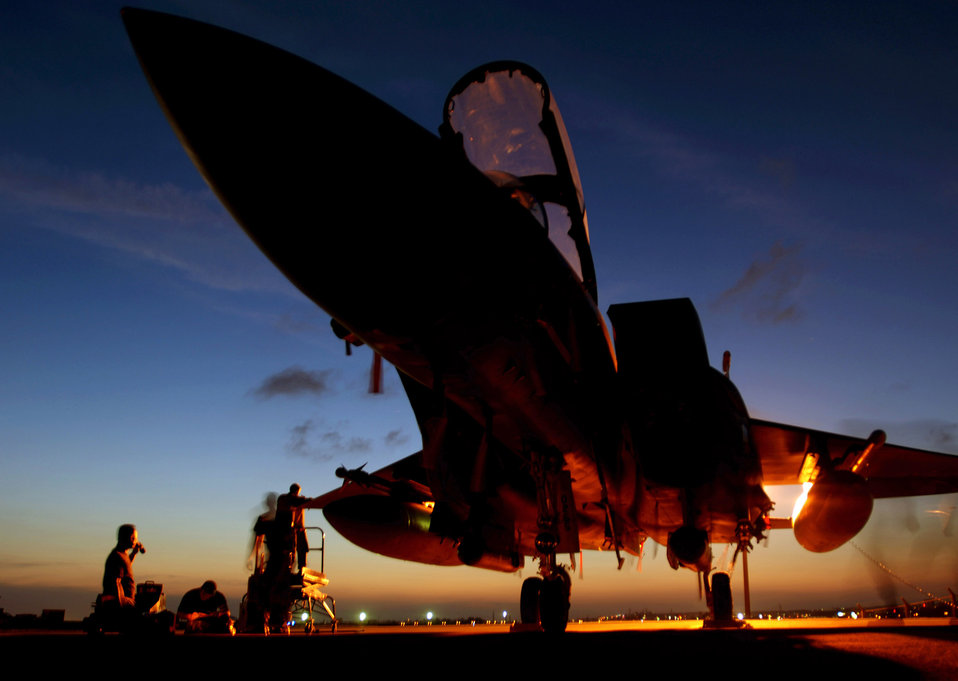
Airmen support PACAF operations while deployed

KADENA AIR BASE, Japan -- Maintainers from the 391st Expeditionary Fighter Squadron inspect their F-15E Strike Eagle aircraft. About 300 Airmen from Mountain Home Air Force Base, Idaho, are here supporting U.S. Pacific Command operations as part of an air and space expeditionary force tasking.